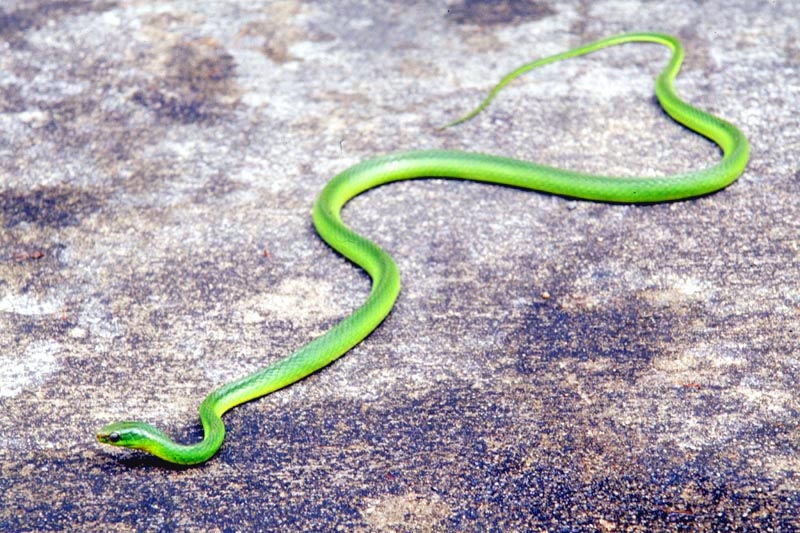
Uploaded by request of Hu Fusheng

Taken in China

Green Snake